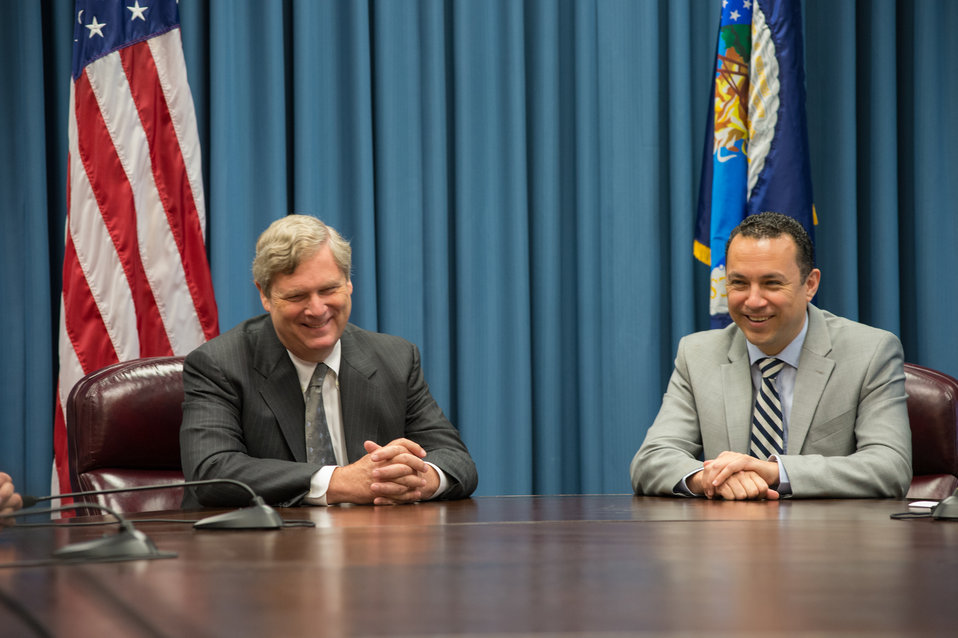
Agriculture Secretary Tom Vilsack and National Hispanic Leadership Agreement and Labor Council Executive Director Hector Sanchez discuss the U.S. Department of Agriculture’s (USDA) progress in Hispanic employment prior to signing a Memorandum of Understanding (MOU) strengthening USDA’s commitment to Hispanic employment and immigration reform at USDA in Washington, D.C. on Thursday, May 22, 2014.